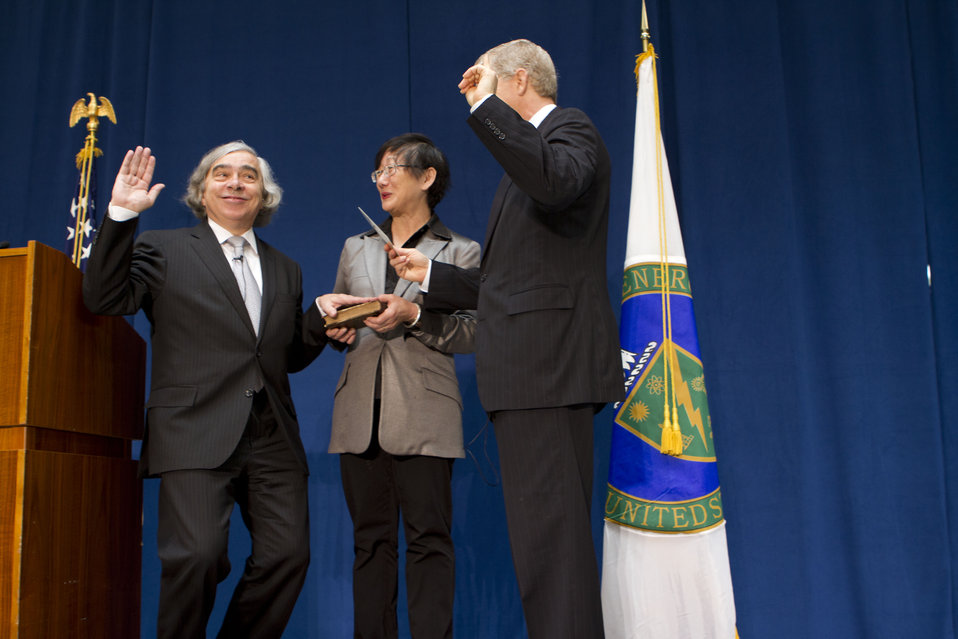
Swearing in as Secretary of Energy

Dr. Ernest Moniz (left) smiles as he recites his oath of office as Secretary of Energy. He was joined by his wife, Dr. Naomi Moniz (center), and Daniel Poneman, Deputy Secretary of Energy (right).